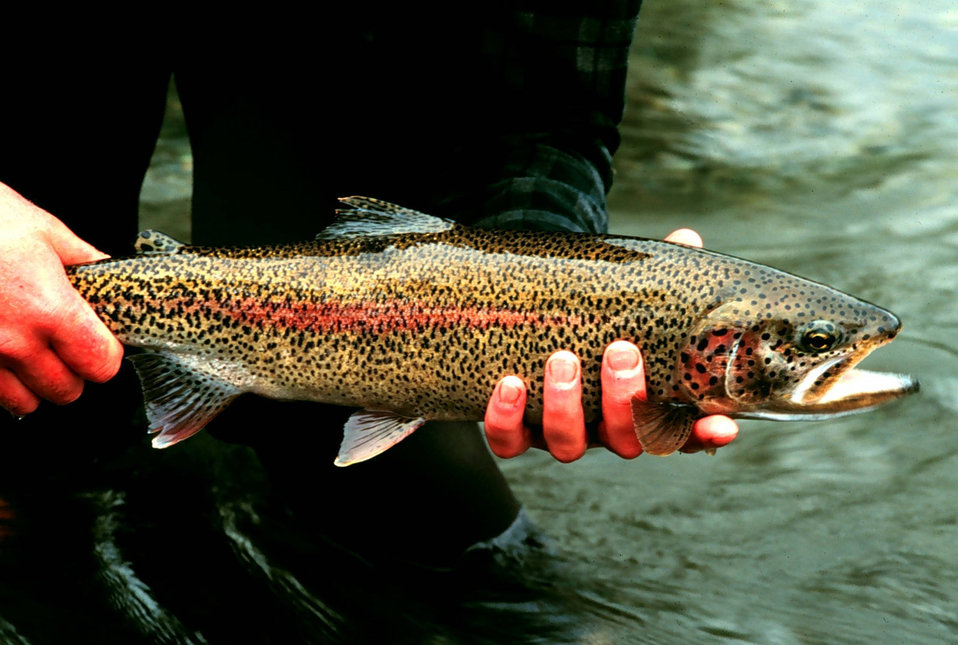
Rainbow Trout in Hand at Gechiak Creek

Photo credit: USFWS

In the context of climate change, ecological restoration will not necessarily be about attempting to restore specific species or combinations of species, but rather about restoring the conditions that favor healthy, diverse, and productive communities of species